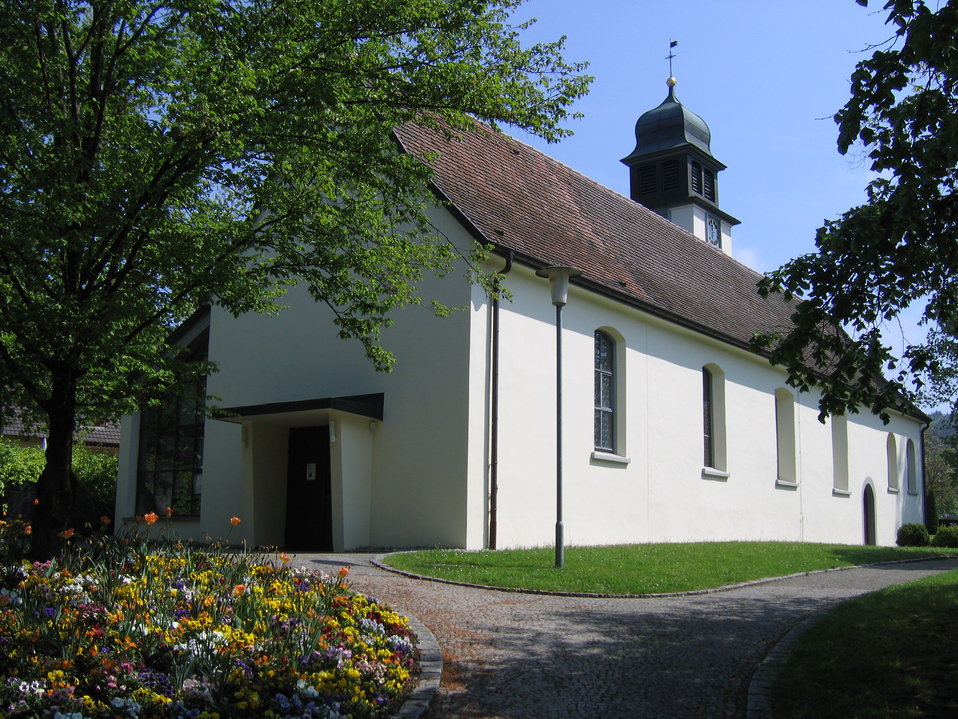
Deutsch: Deutschland - Baden-Württemberg - Bodenseekreis - Überlingen - Nesselwangen: Kirche 'St. Peter und Paul'